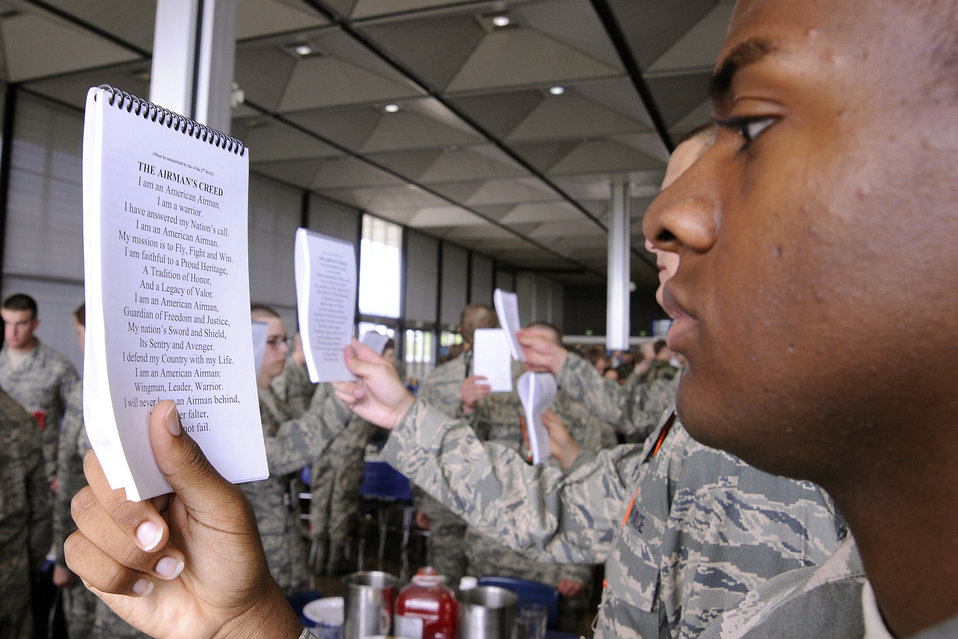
New Academy cadets learn dining 'traditions'

Basic cadet Blake Washington studies the Airman's Creed while learning meal procedures during the first day of basic cadet training at the U.S. Air Force Academy, Colo., June 25, 2010.